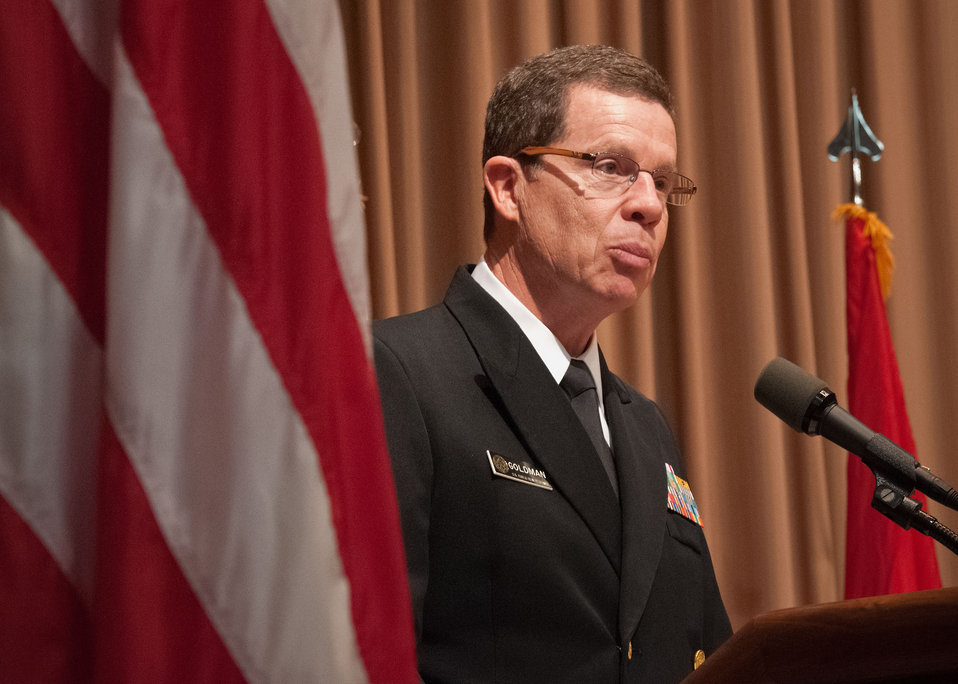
Agriculture Assistant Administrator for the Office of Public Health Science at the Food Safety and Inspection Service Dr. David Goldman introduces Agriculture Deputy Under Secretary, Farm and Foreign Agricultural Services(FFAS) and past member of the Marine Corps Reserve Karis Gutter Karis Gutter who offered opening remarks at the U. S. Department of Agriculture Veterans Day Observance: Honoring All Who Served, in Washington, D.C. Wednesday, Nov. 7, 2012. Dr. Goldman is a member of the Commissioned Corps of the U.S. Public Health Service, assigned to the Food Safety Inspection Service.